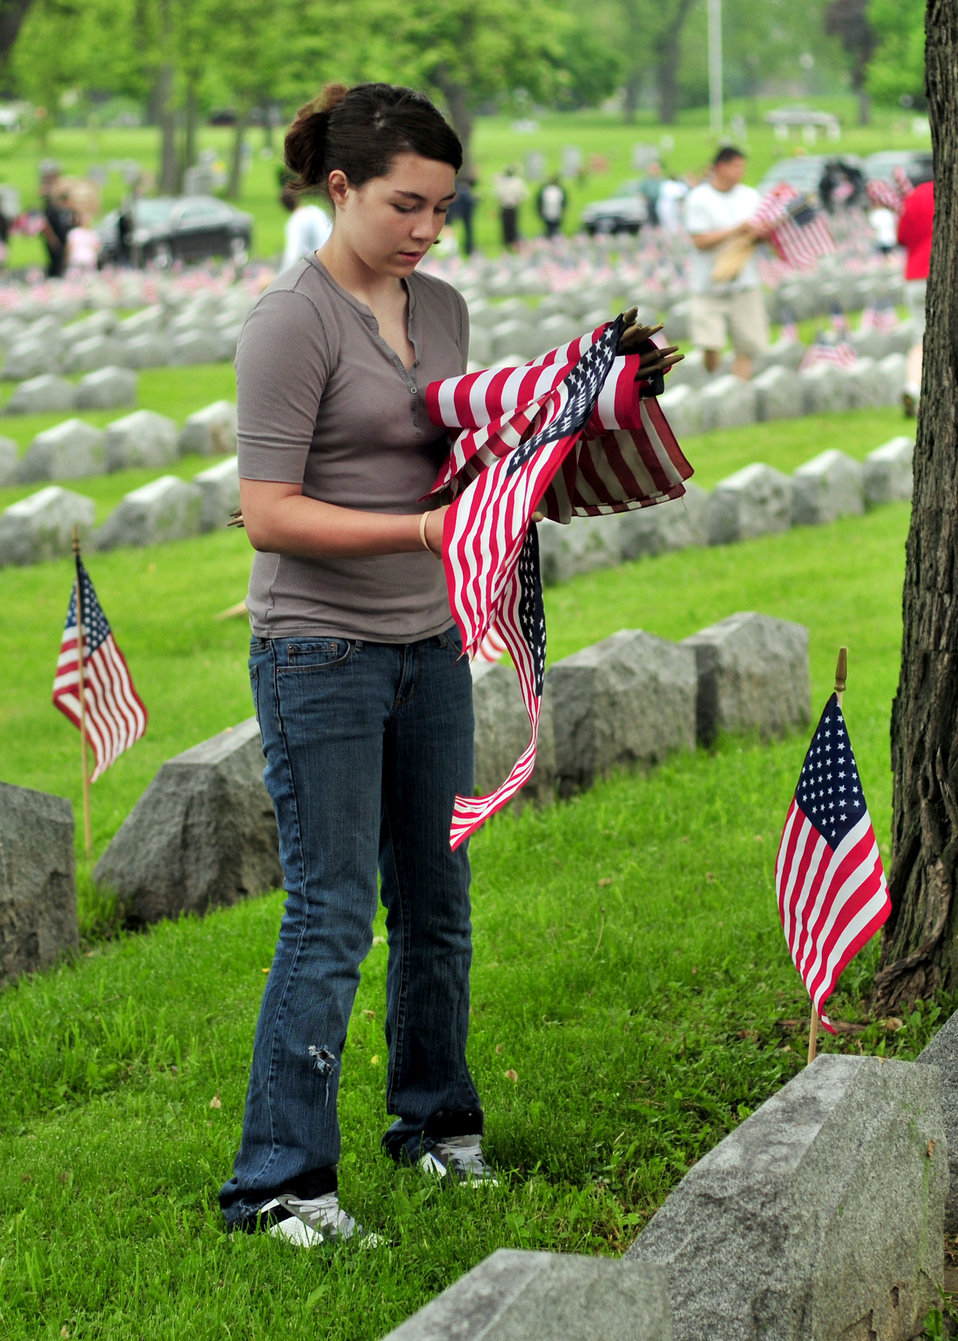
Honoring the fallen

Volunteers place American flags on graves during a Memorial Day ceremony May 30, 2011, at Forest Lawn Cemetery in Buffalo, NY.